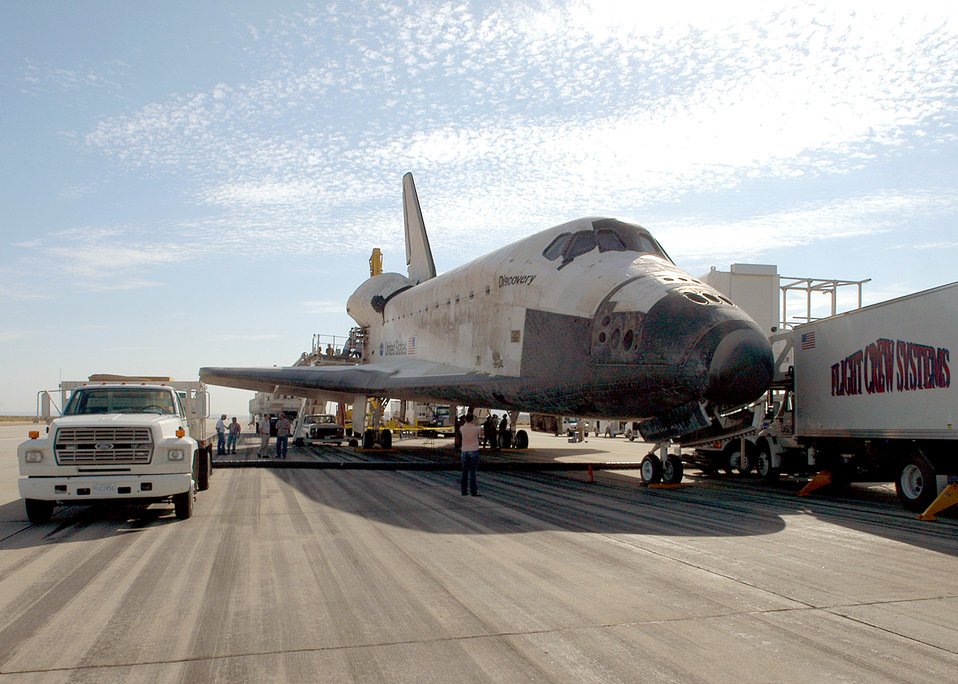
Safe landing

EDWARDS AIR FORCE BASE, Calif. -- Space Shuttle Discovery sits at the end of the runway here after its safe landing Aug. 9. The shuttle returned from a 14-day mission in space.